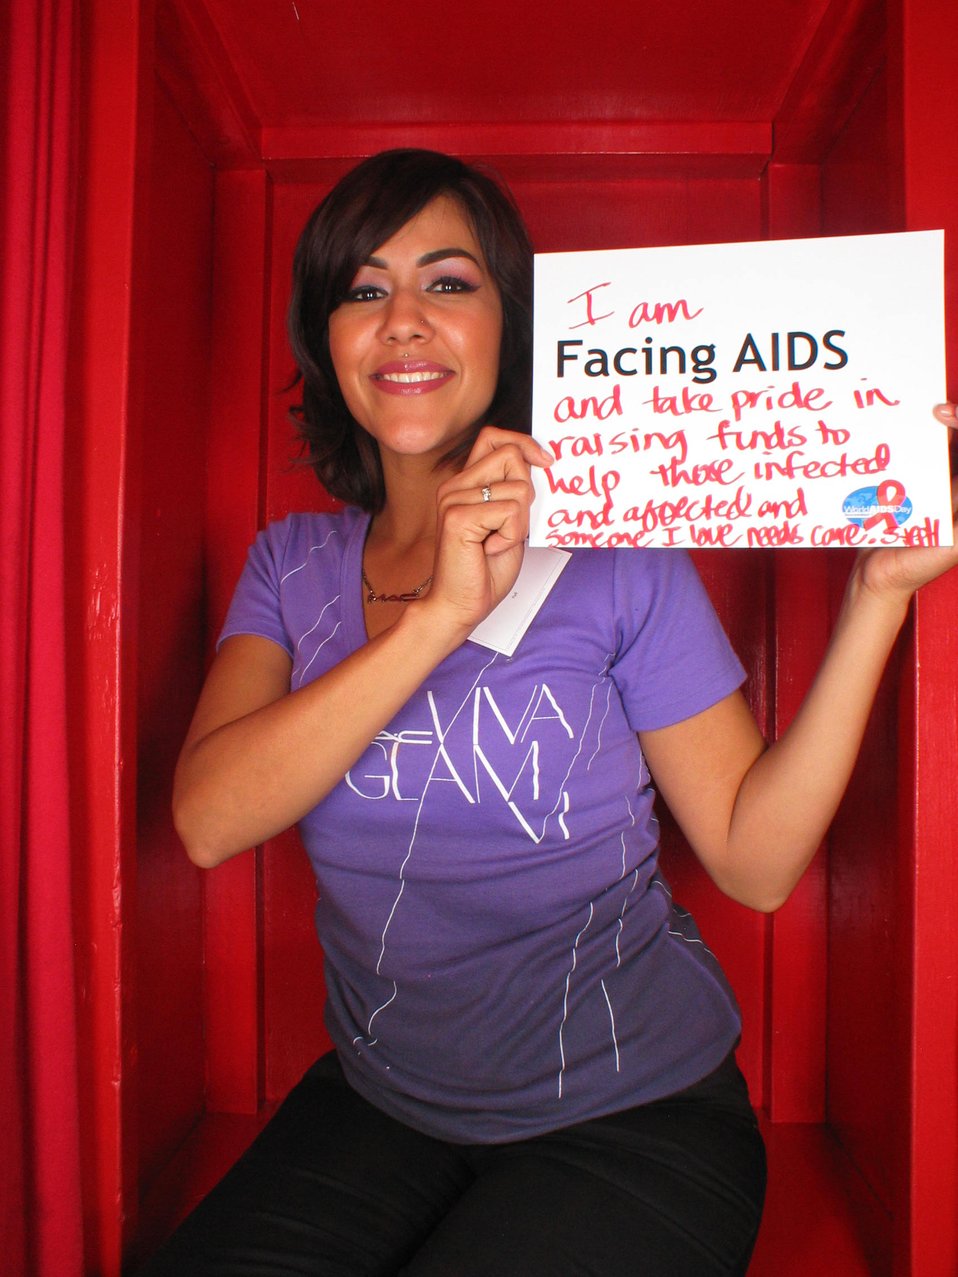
I am Facing AIDS and take pride in raising funds to kep those infected and affected and someone I love needs care.